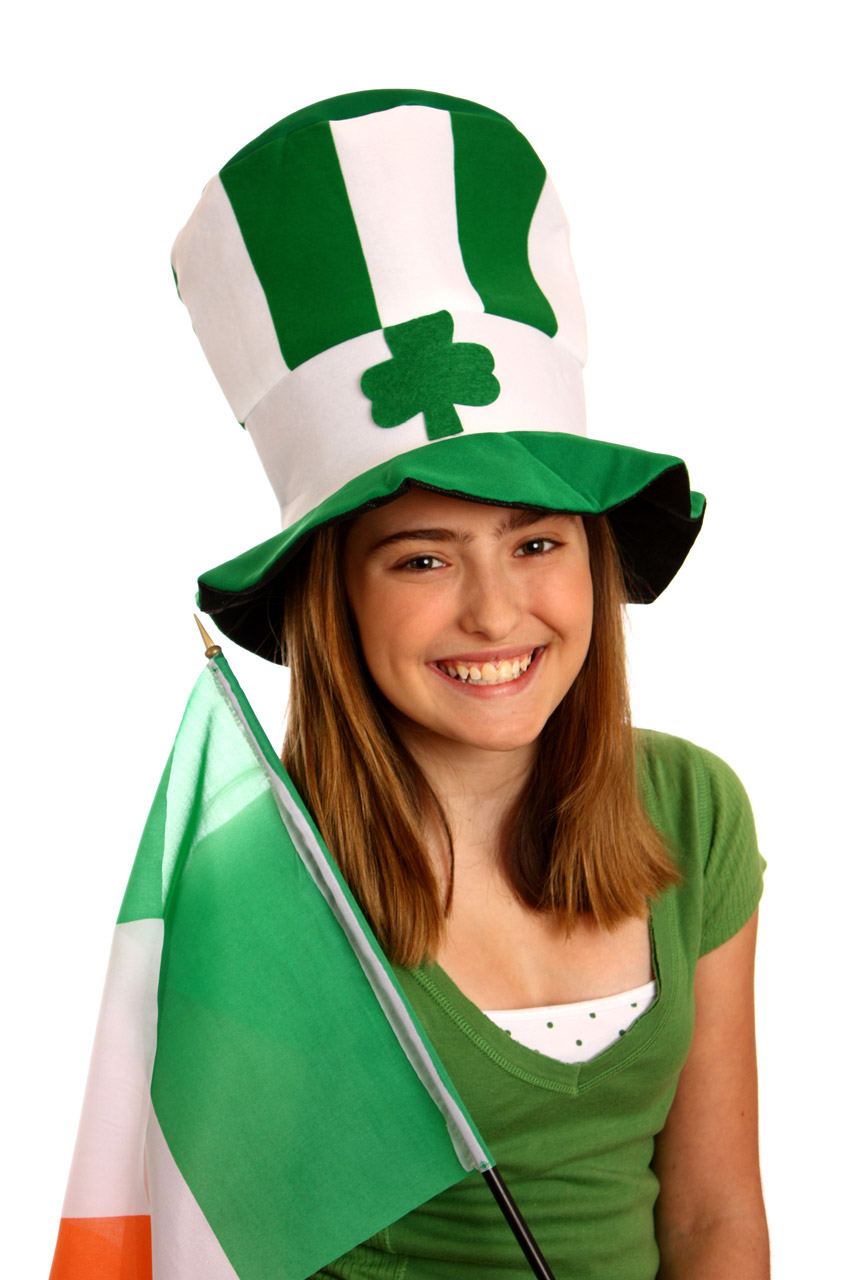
Saint patrick's day girl

A cute young girl dressed up for saint patrick's day with an irish flag.